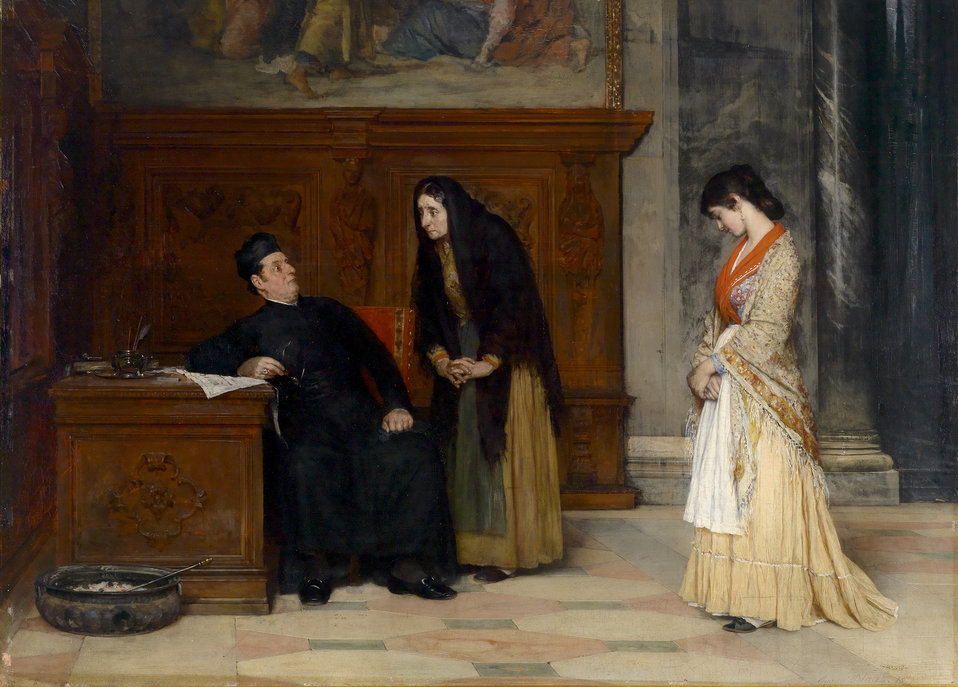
Eugen von Blaas In der Sakristei 1877